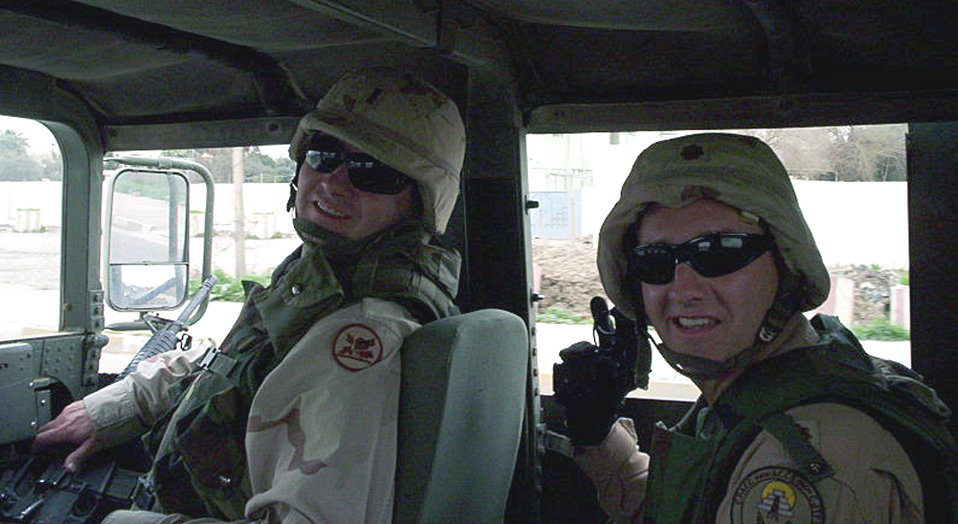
Brother escorts brother in sister-service convoy

MOSUL, Iraq -- Then-Maj. Greg Harbin (right) and his younger brother, Army 1st Lt. Eric Harbin, share a smile here before setting off. Lieutenant Harbin escorted his visiting brother through the combat zone to the headquarters here recently. Lt. Col. Greg Harbin, who was promoted May 1, is deployed from 9th Air Force headquarters at Shaw Air Force Base, S.C. Lieutenant Harbin is a member of the Alabama National Guard.